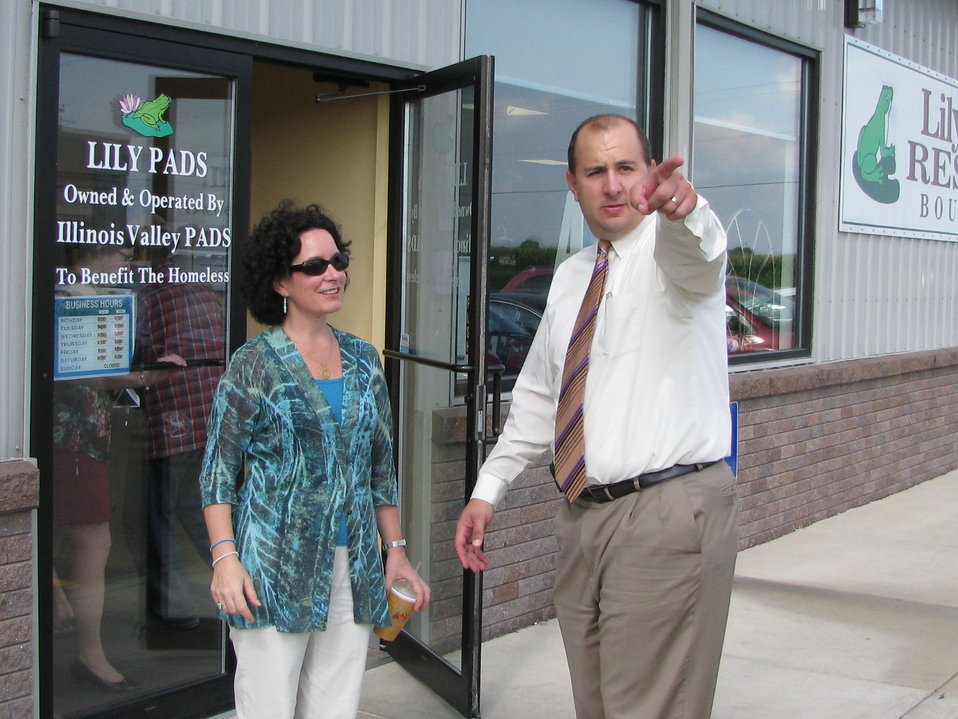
Lily PADS visit

John McCormick, III, Senior Vice President of Hometown National Bank in LaSalle, points Deputy Under Secretary Kunesh toward the Illinois Valley PADS Homeless Shelter in Peru. All proceeds from Lily PADS Resale Boutique are provided to the shelter.